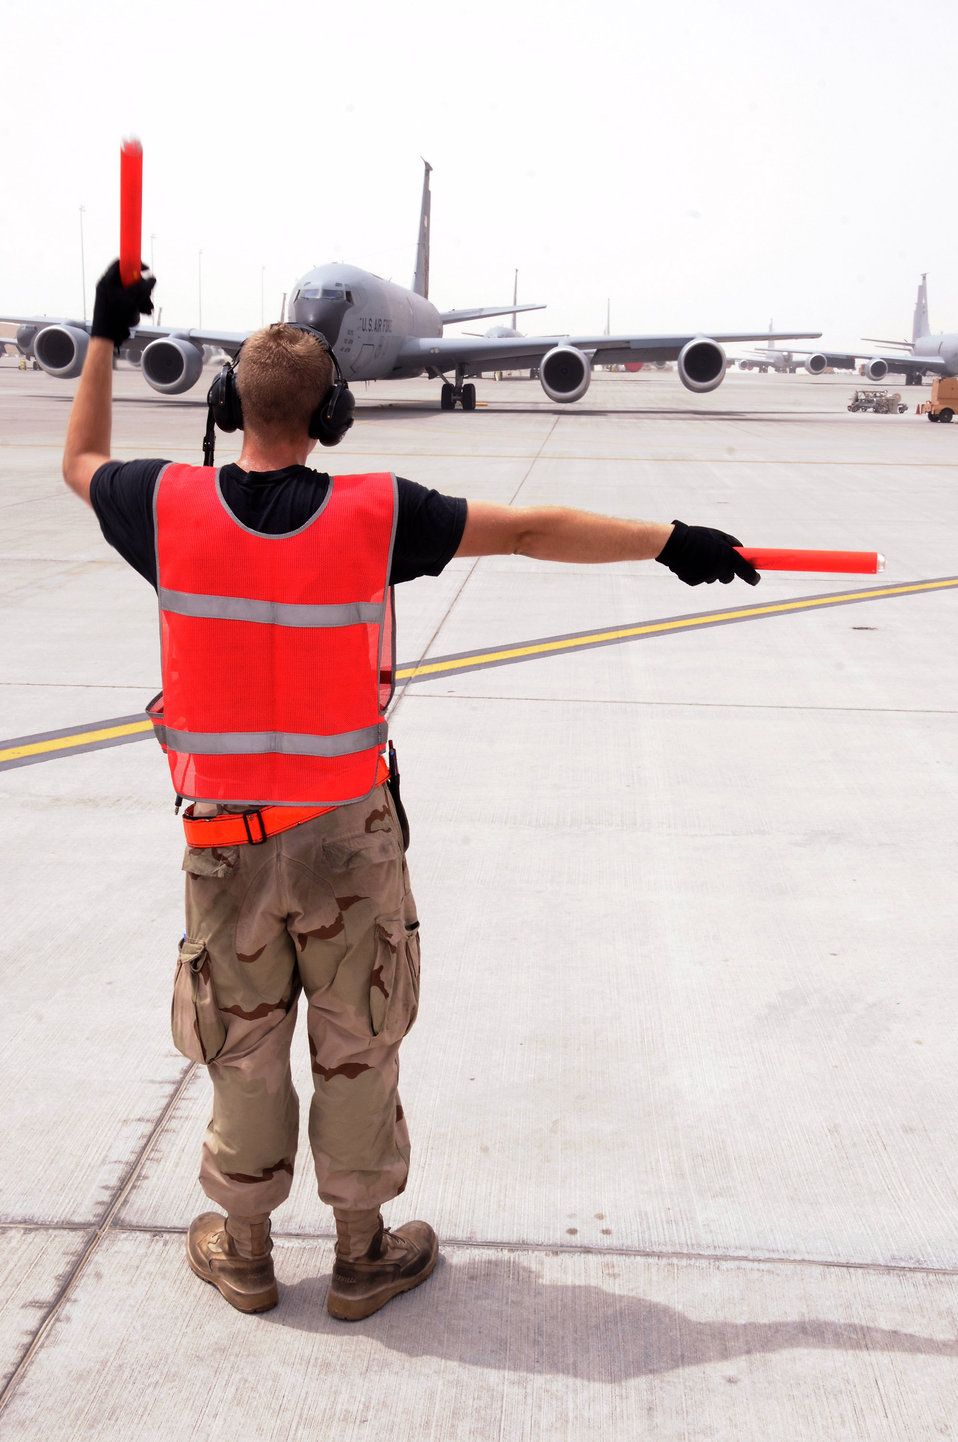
Gas and go

Airman 1st Class Derek Larue directs a turn for the KC-135 Stratotanker he is marshaling out of its parking spot Aug. 3 at a Southwest Asia air base. Members of the 340th Expeditionary Aircraft Maintenance Squadron refuel all types of bombers, fighters and other support aircraft engaged in perations Iraqi Freedom and Enduring Freedom and Combined Joint Task Force Horn of Africa. Airman Larue is assigned to the 340th EAXMS from Grand Forks Air Force Base, N.D.